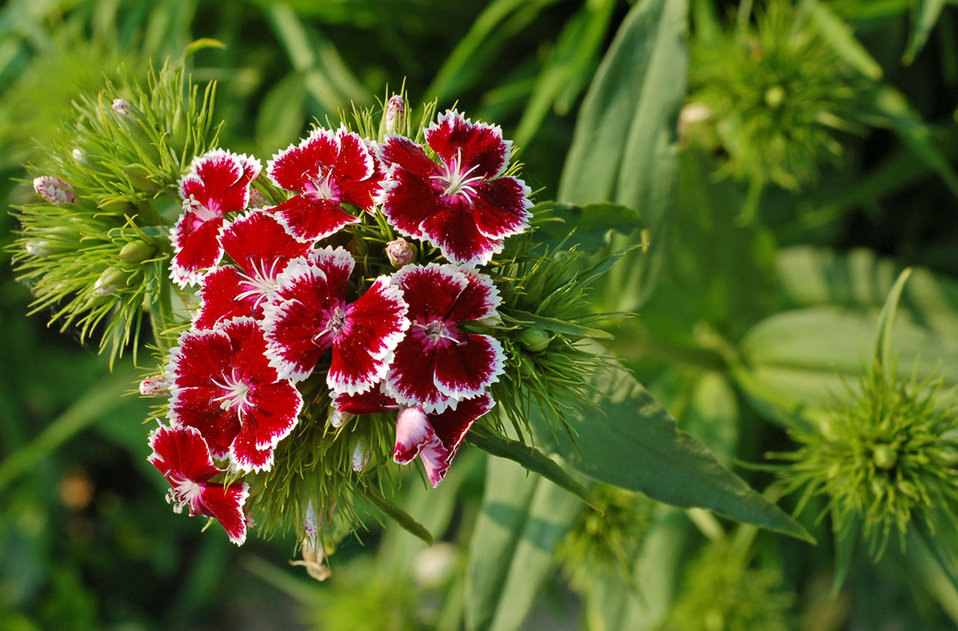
Wild carnation

Pale pink and crimson coloured wild carnation flowers.